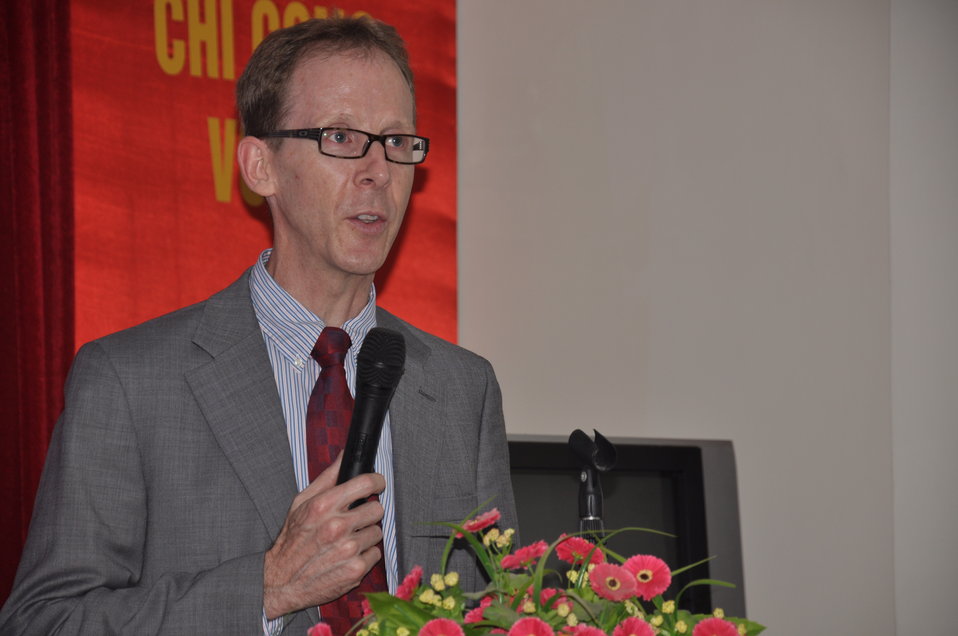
USAID Mission Director Joakim Parker at a Handover Ceremony of Personal Protective Equipment to Help Prevent Disease Outbreaks

Handover of personal protective equipment event in Hanoi.